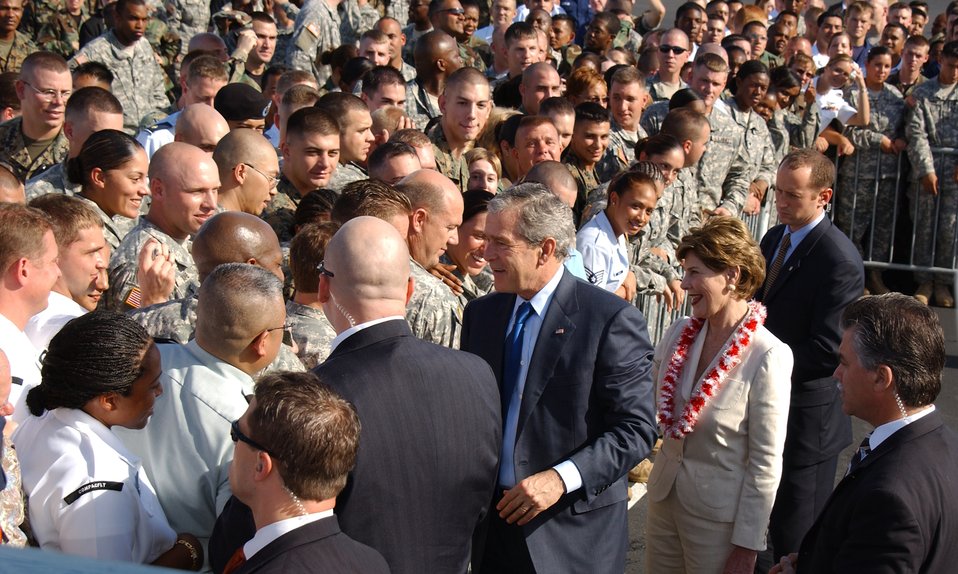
President Bush greets Airmen

President George Bush and First Lady Laura Bush meet with servicemembers, Nov. 21, on the Hickam Air Force Base flighline, before boarding Air Force One and heading back to Washington D.C.